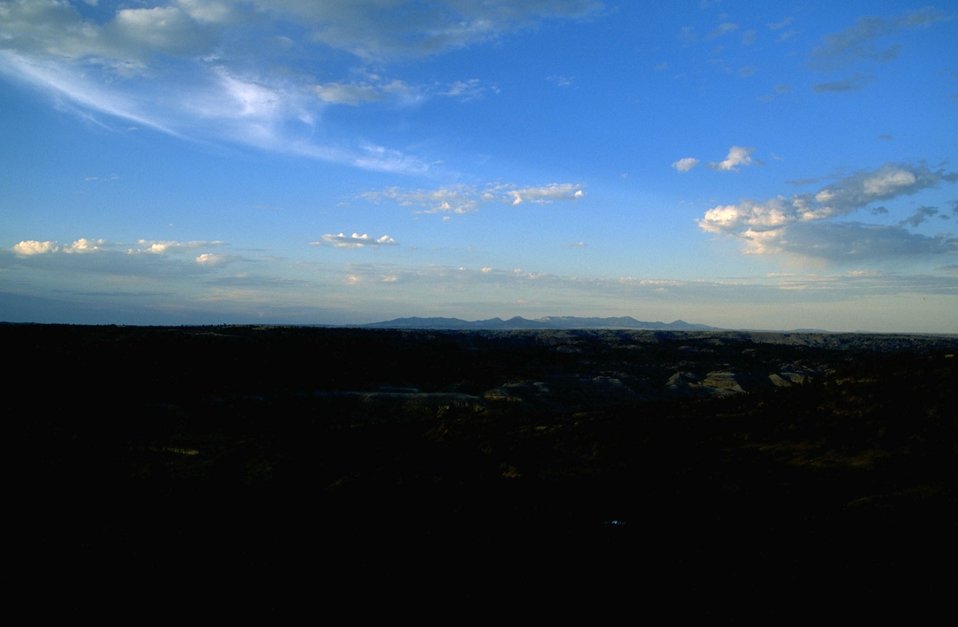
Missouri Breaks topography/scenery